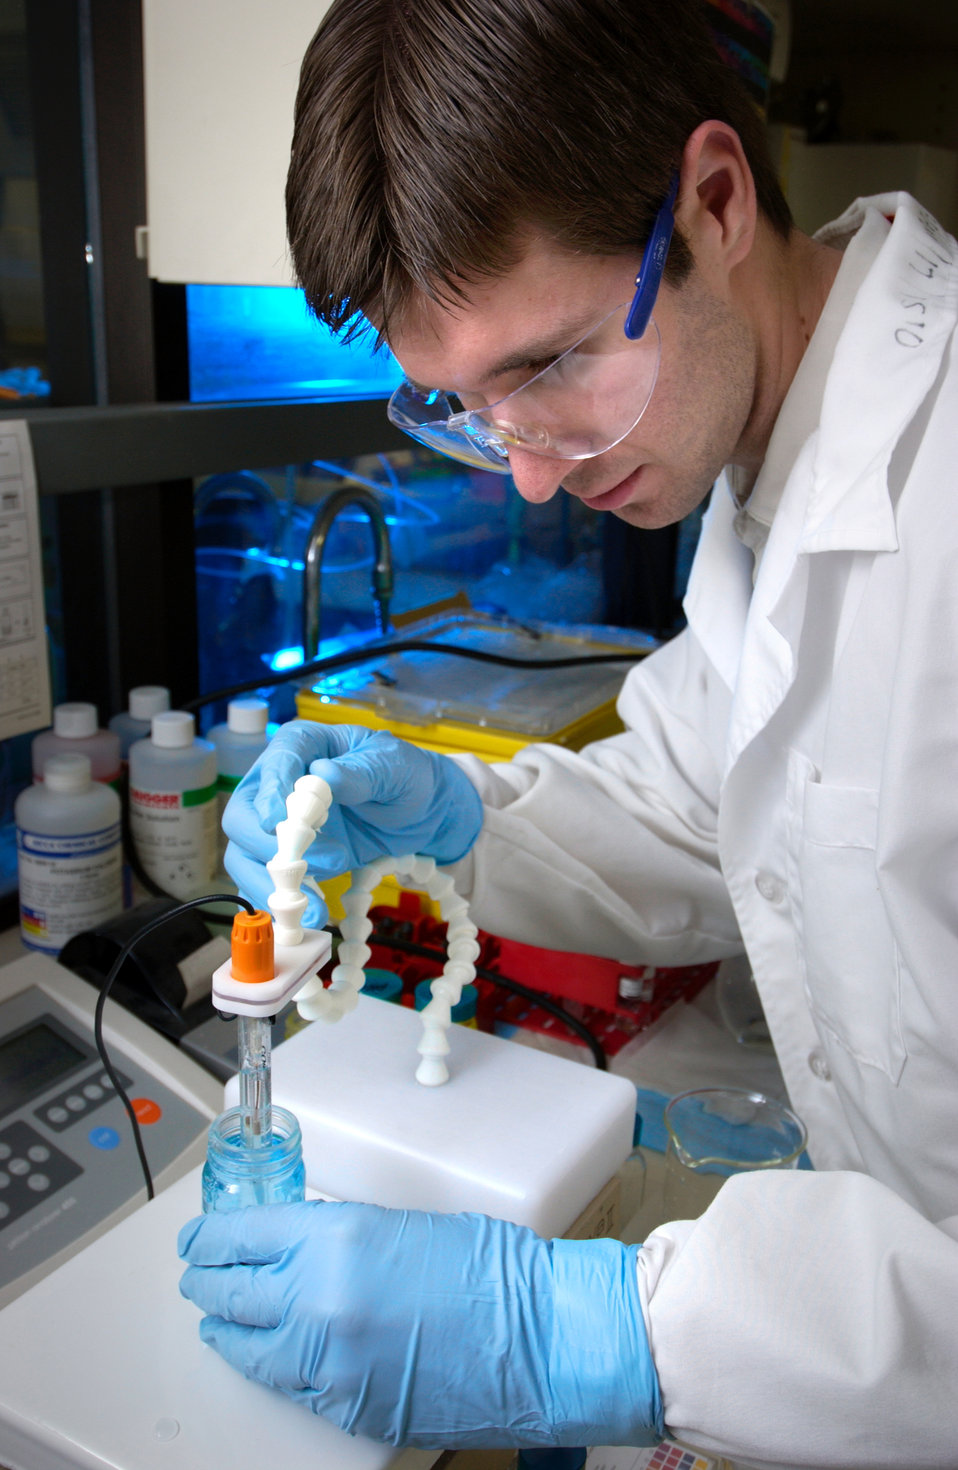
Jason Tully, a CDC laboratorian, was shown here calibrating a pH meter in the Personal Care Products Laboratory (PCPL) located in a CDC lab on the organization's Chamblee, Georgia campus.